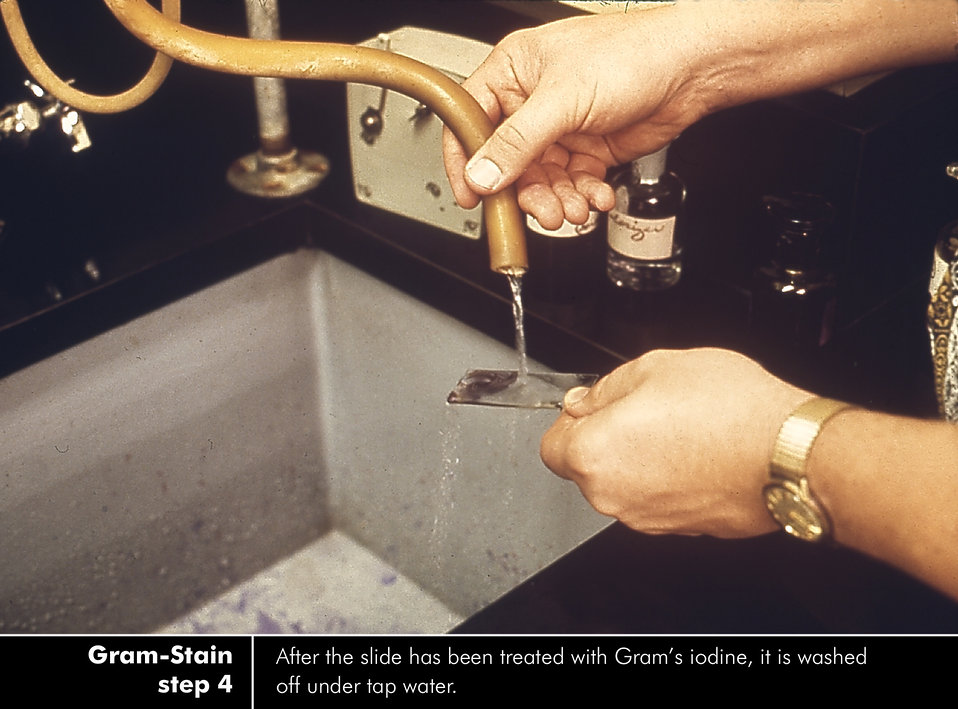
Gram-stain procedure - Step 4 of 7. See PHIL ID#'s: 3433, 3426, 3427, 3435, 3437, 3436, 3434 for the complete set.